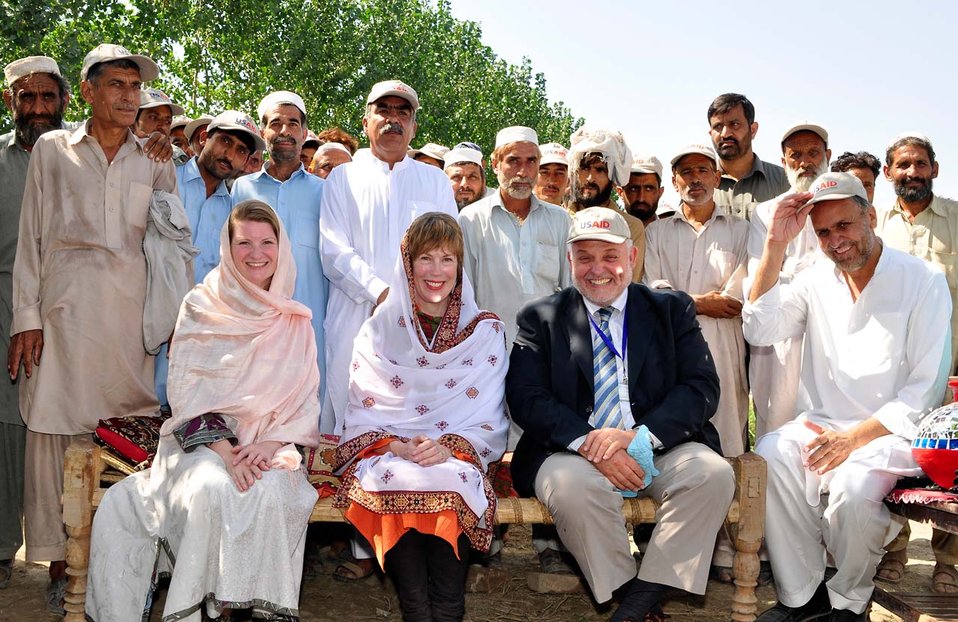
Dr. Marilyn Wyatt's Visit to the Flood-affected Farming Communities in Khyber Pakhtunkhwa